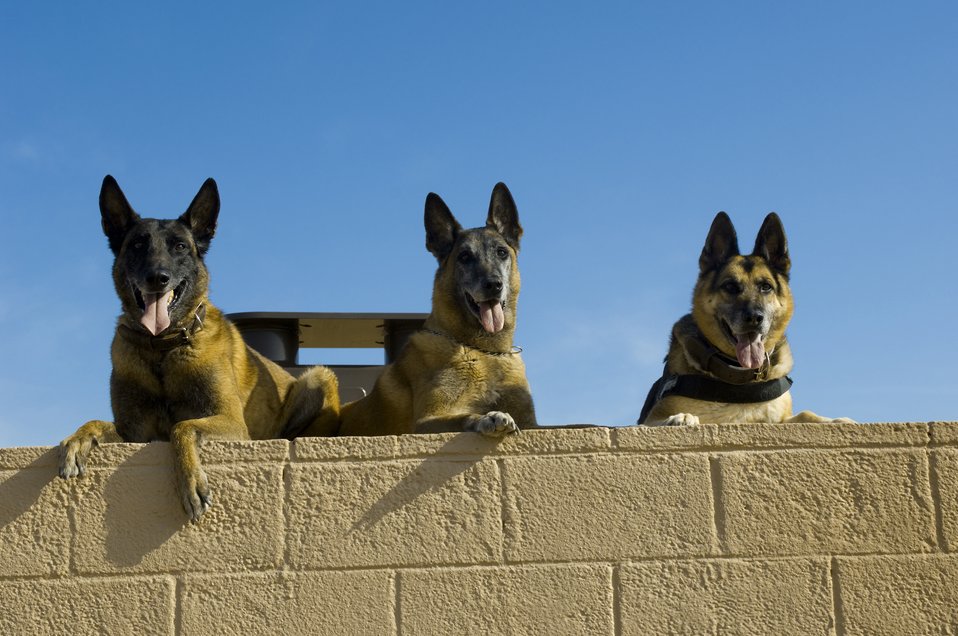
Working dogs take final run

Roc, Kisma and Jampy, military working dogs assigned to the 56th Security Forces Squadron, take a rest at the Military Working Dog kennels at Luke Air Force Base, Ariz., March 25, 2010.